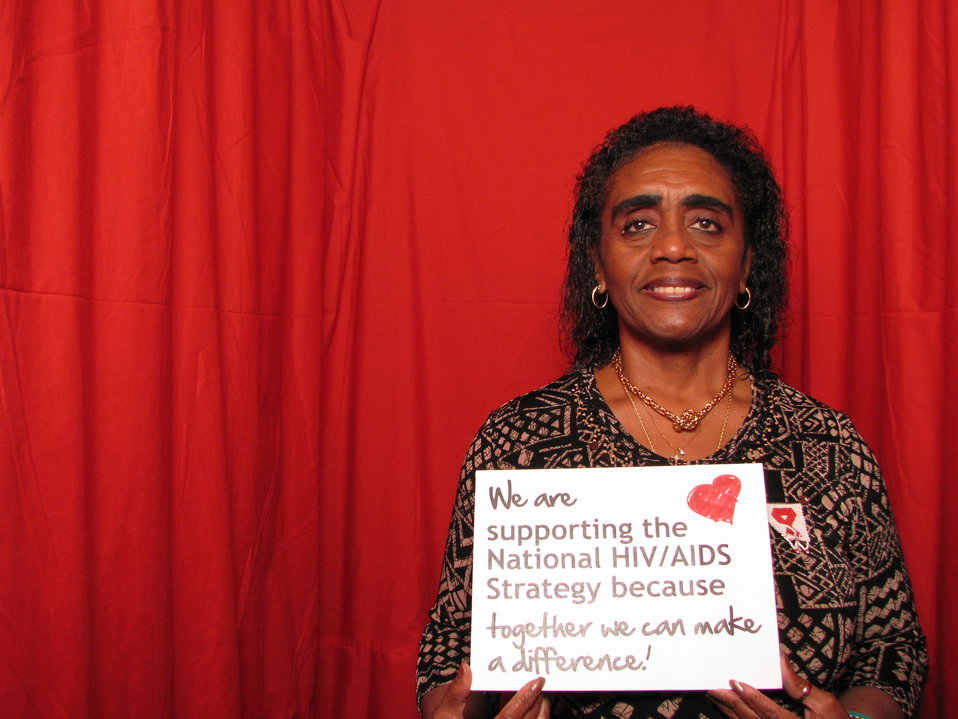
We are supporting the National HIV/AIDS Strategy because together we can make a difference!

From the AIDS.gov photo booth at the U.S. Conference on AIDS, September 2010 (Orlando, FL).